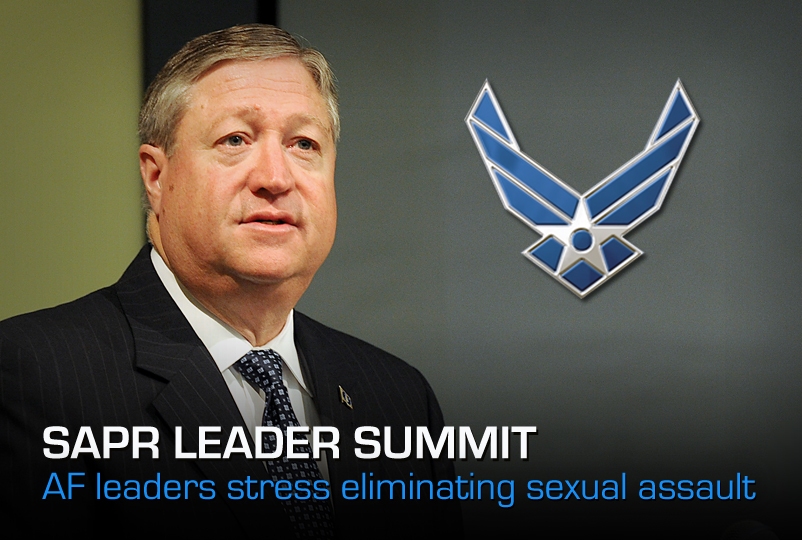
SAPR Leaders Summit